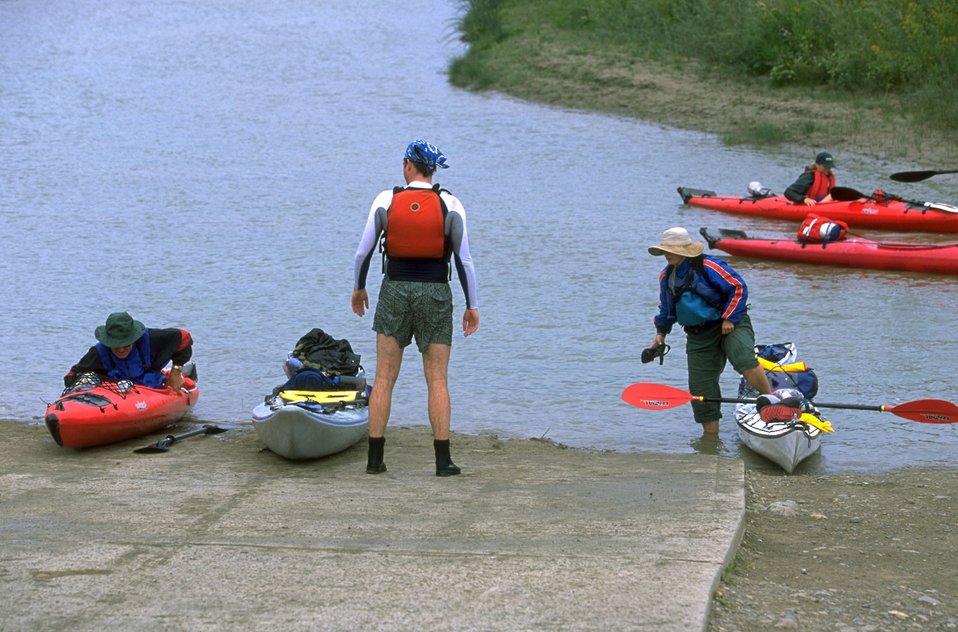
Boat launch at Coal Banks Landing